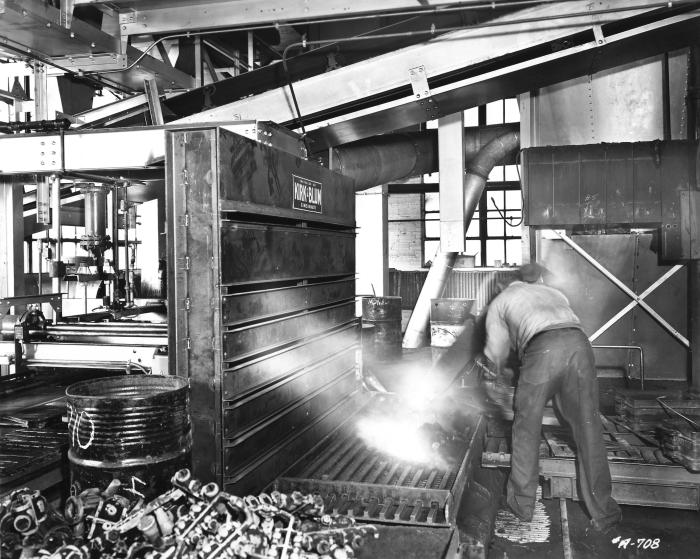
This historical photograph was provided by the Center for Disease Control's (CDC), National Institute for Occupational Safety and Health (NIOSH). Depicted here, was an industrial worker in the process of moving metal parts to what is known as a 'foundry shake-out table', which was equipped with a Kirk & Blum ventilation unit. The shake-out table removed excess sand still clinging to the newly created metallic parts after having been removed from their sand molds. Note how the liberated fumes are vacuumed away through the ventilation system to the left.